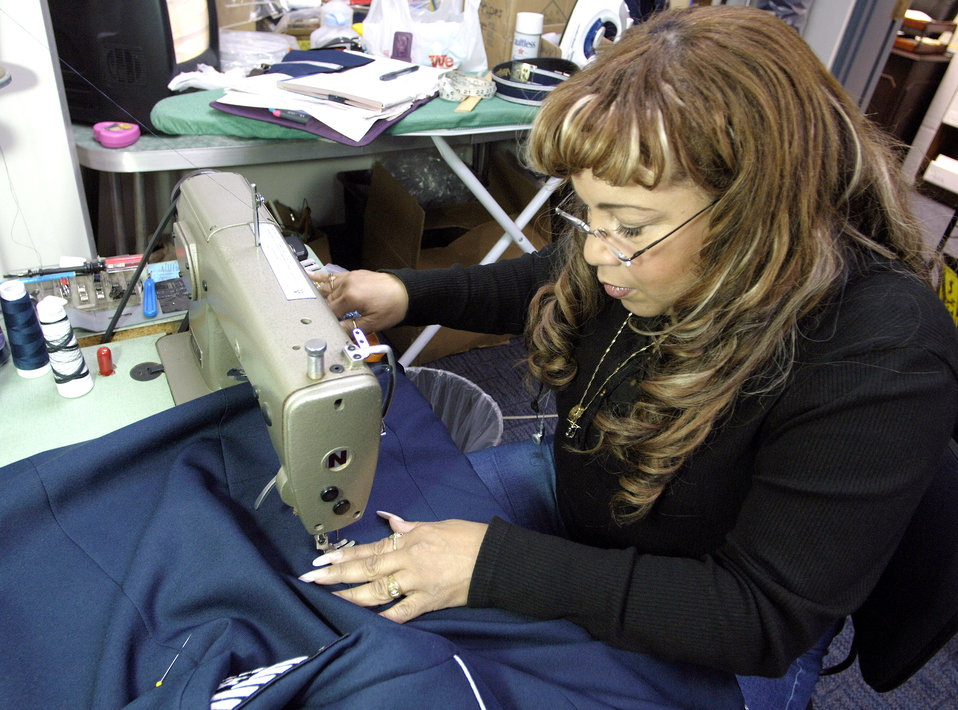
Band Seamstress

BOLLING AIR FORCE BASE, D.C. (AFPN) -- Retired Senior Master Sgt. Juanita Williams works on one of the many U.S. Air Force Band uniforms that needs her attention. Ms. Williams volunteers her time once a week to help keep band members here looking their best for their many performances throughout the Washington, D.C. area and on their world travels. She was a part of the band for many years before her retirement in 1995.